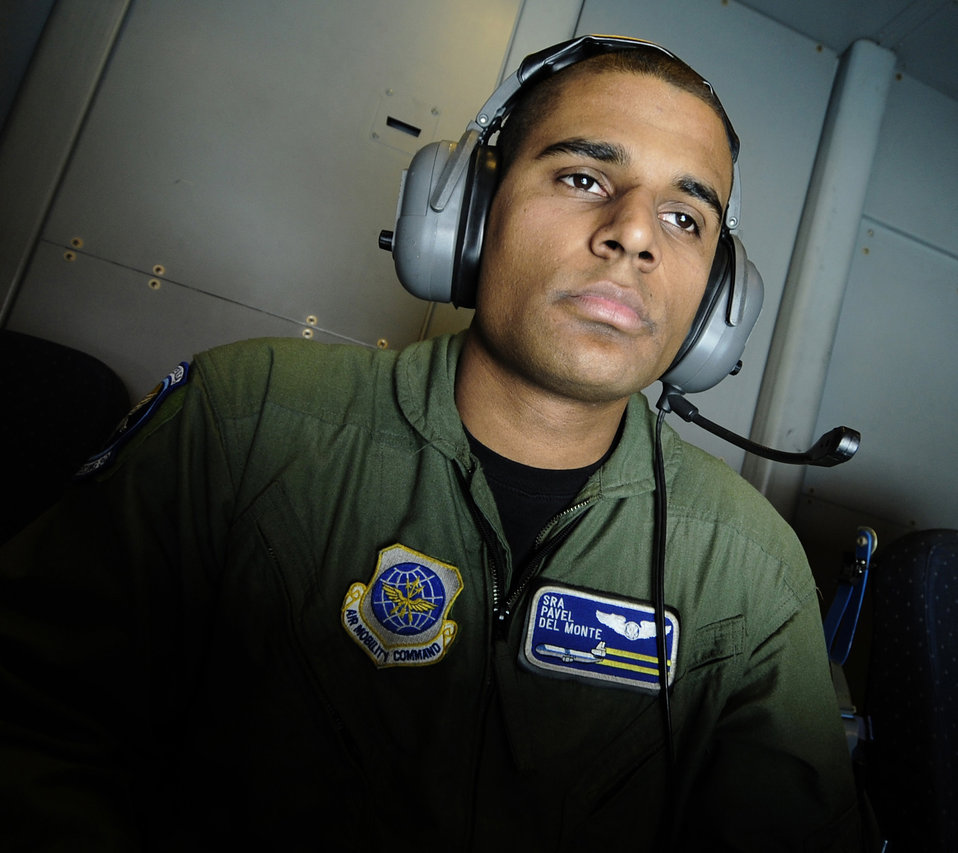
KC-10s keep Red Flag-Alaska aircraft fueled to fight

Senior Airman Pavel Del Monte operates a boom on a KC-10 Extender while aerial refueling an aircraft during Red Flag-Alaska April 22 over Alaska. Airman Del Monte is with the 6th Air Refueling Squadron at Travis Air Force Base, Calif.